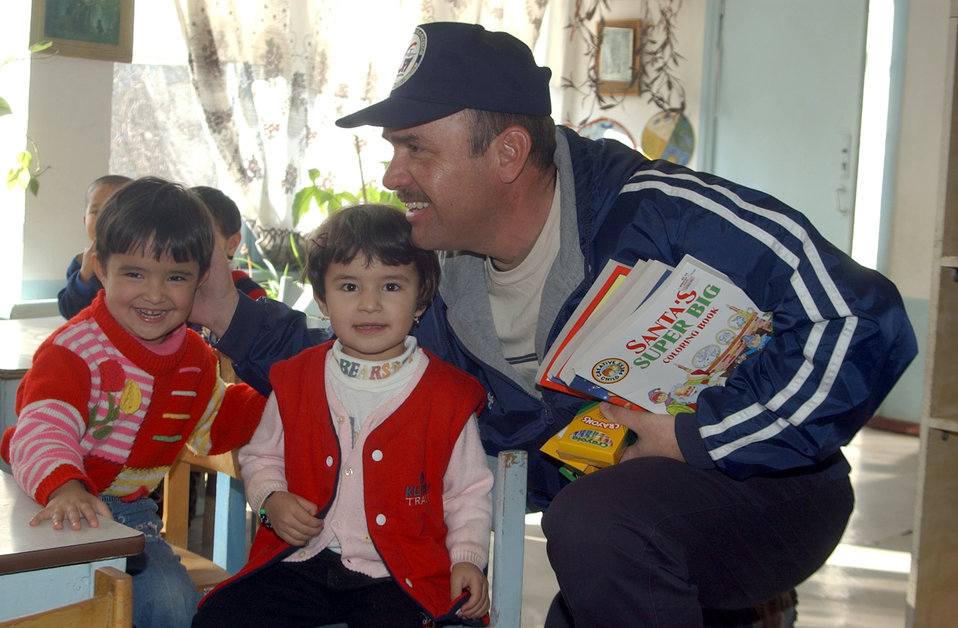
A helping hand

KARSHI-KHANABAD, Uzbekistan -- Master Sgt. Joseph Sites delivers school supplies to children at a local primary school Feb 2. Sergeant Sites is the first sergeant for the 416th Air Expeditionary Group here. Airmen are providing humanitarian relief to local schools, churches and orphanages using donations from their home bases, churches and civic groups. Sergeant Sites is deployed from the 89th Mission Support Squadron at Andrews Air Force Base, Md.